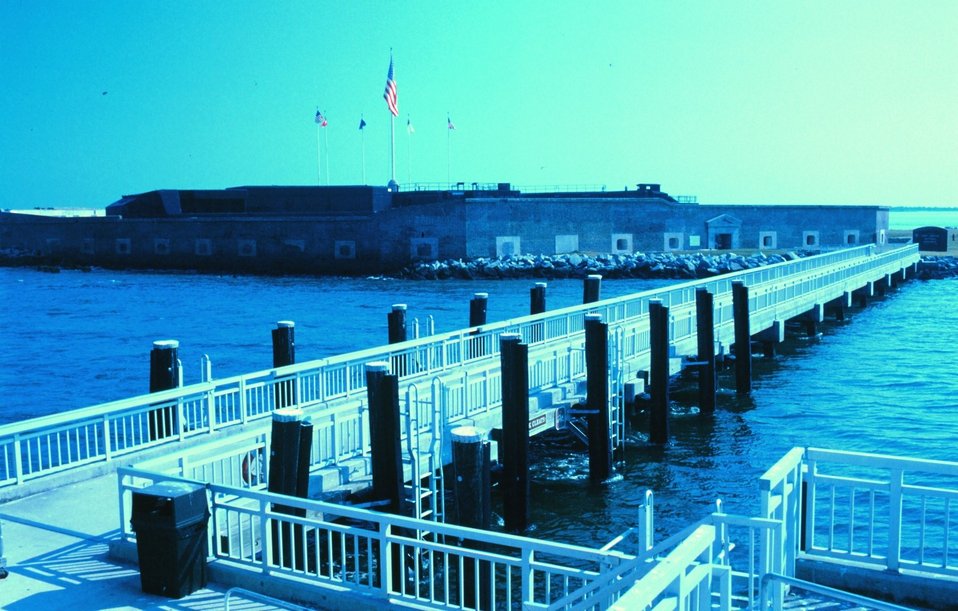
A view of Fort Sumter, where the first shots of the Civil War were fired.